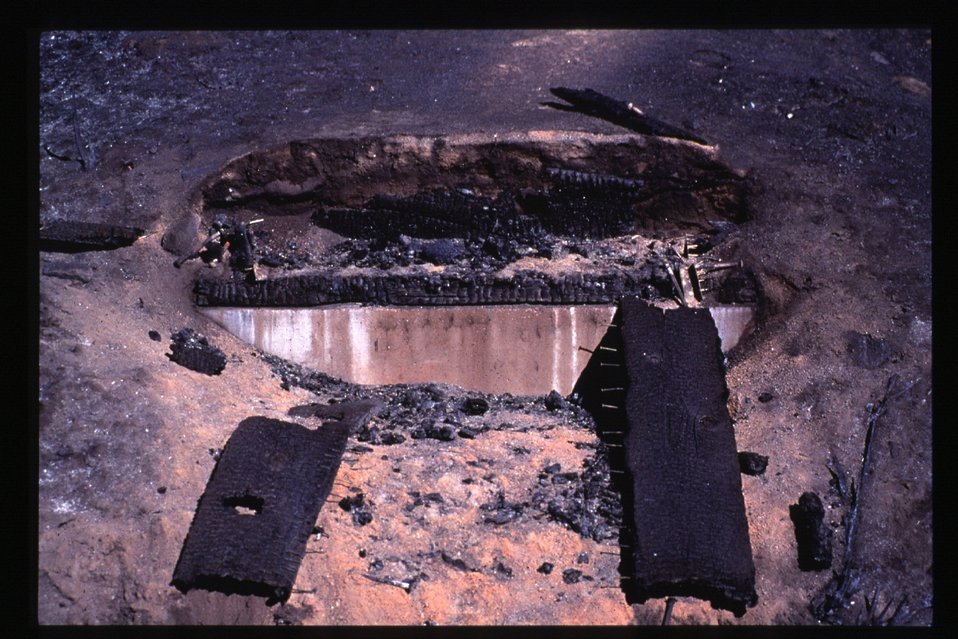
8th Street Fire Four Rivers Field Office LSRD Lower Snake River District